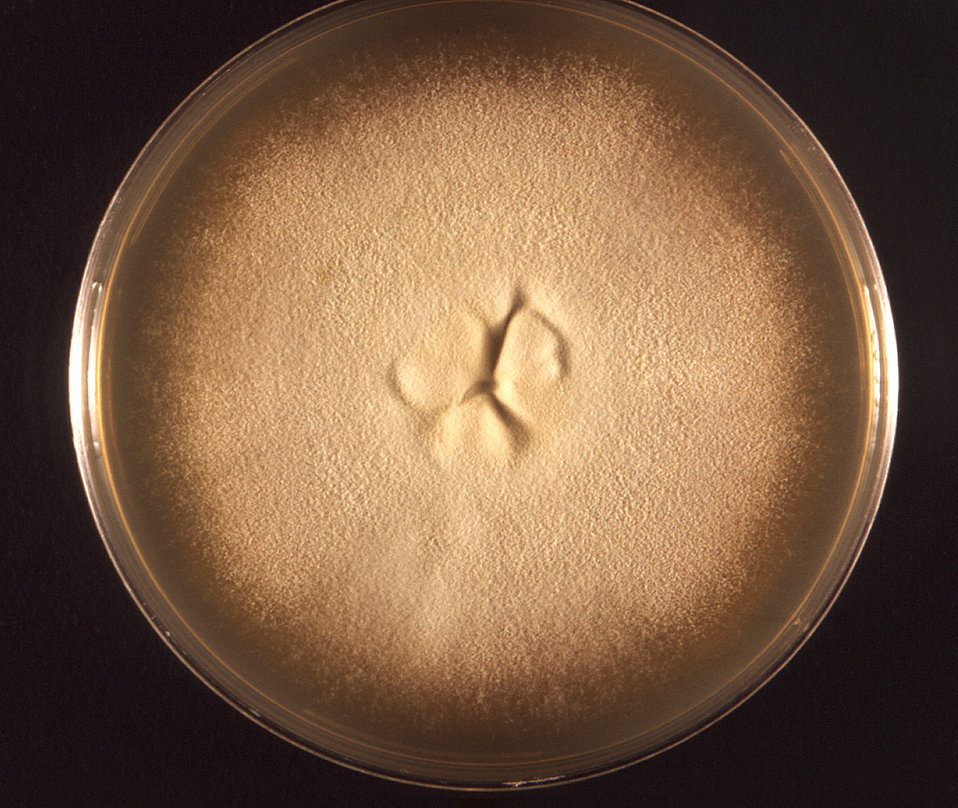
This photomicrograph revealed some of the morphology exhibited by a Trichophyton tonsurans fungal colony. Note the glaborous, or smooth velvety appearance of this colony, and its characteristically raised center, and yellowish-beige coloration